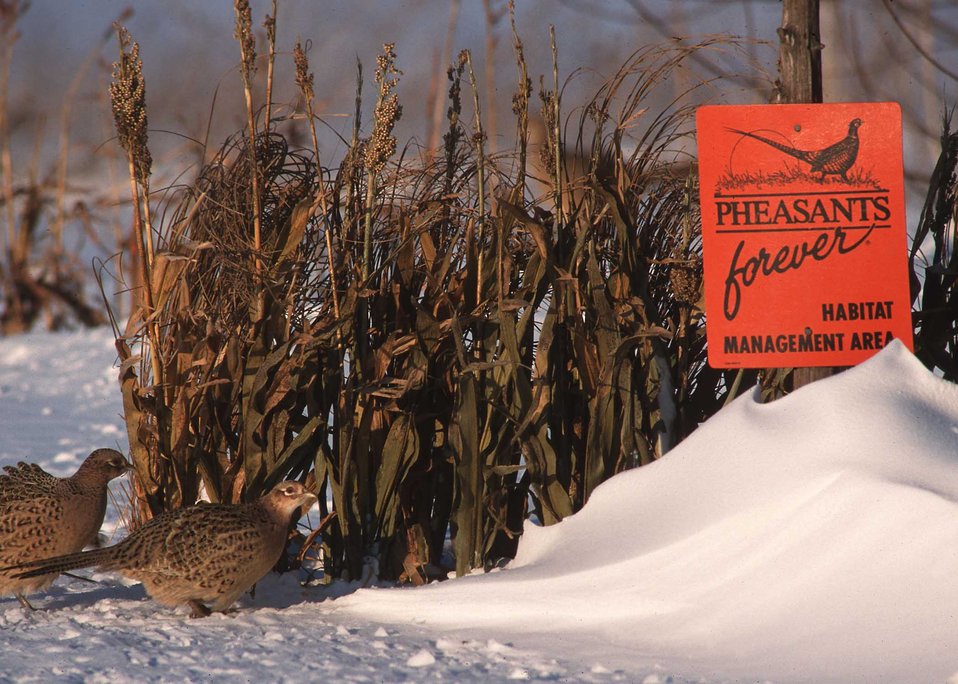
Pheasants and other wildlife species need both food and cover in harsh Iowa winters. It is provided by landowners with both annual and perennial plantings.